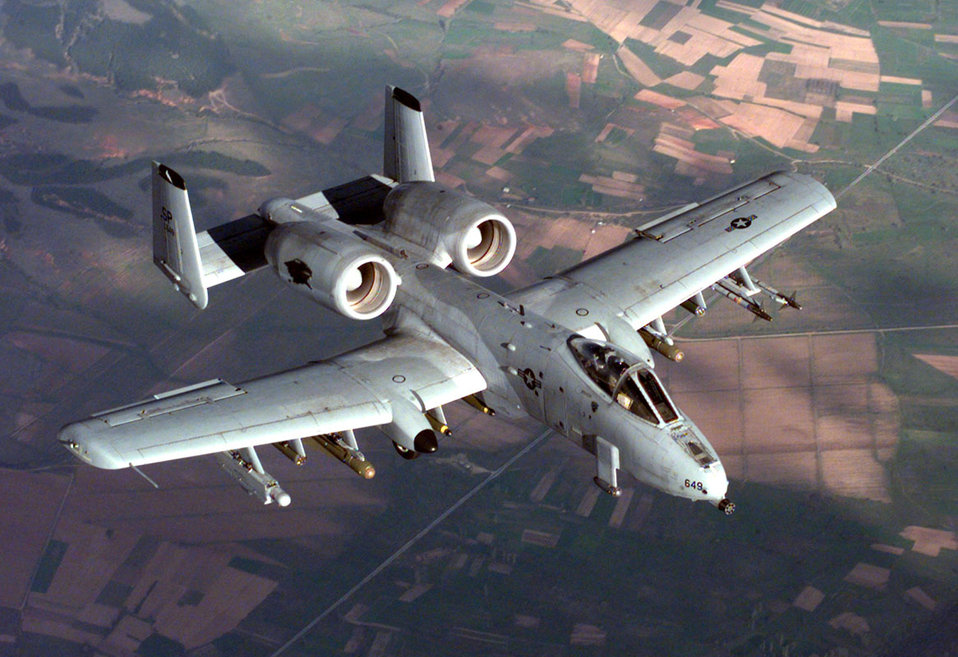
Warthog

1990's -- An A-10 Thunderbolt II, from the 52nd Fighter Wing, 81st Fighter Squadron, Spangdahlem Air Base, Germany, in flight during a NATO Operation Allied Force combat mission. The